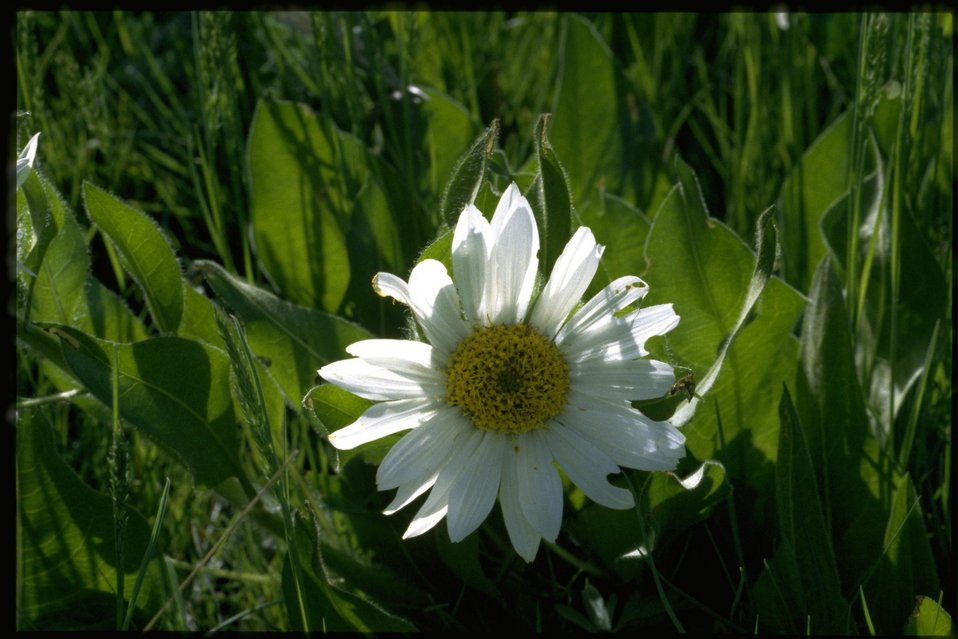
Closeup shot of White-rayed Mule's-ears wildflower (Wyethia Helianthoides).